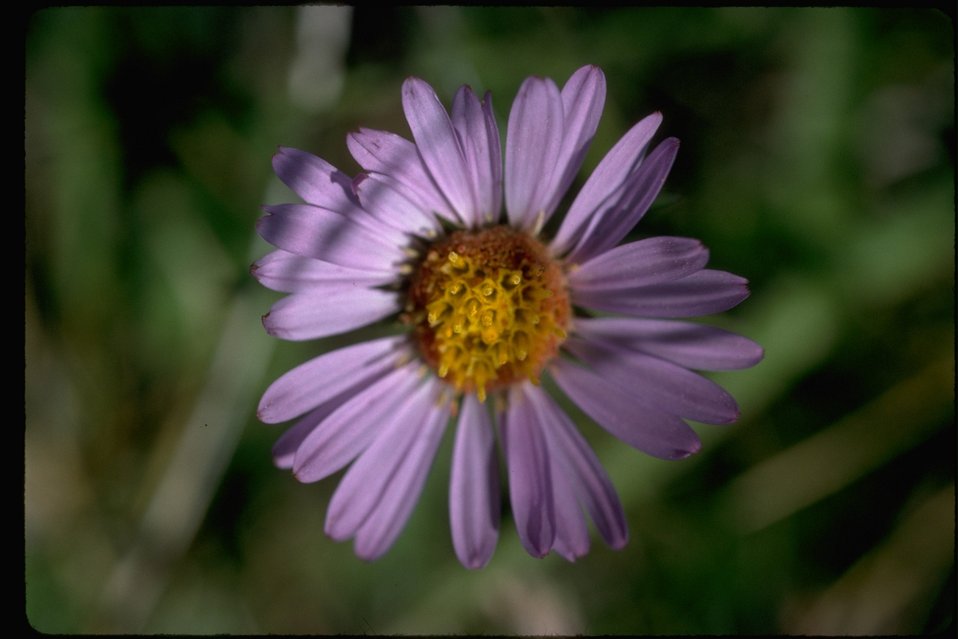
A Purple Fleabane (Erigeron aspergineus) found in the high elevations of Steens Mountain in Southeastern Oregon.